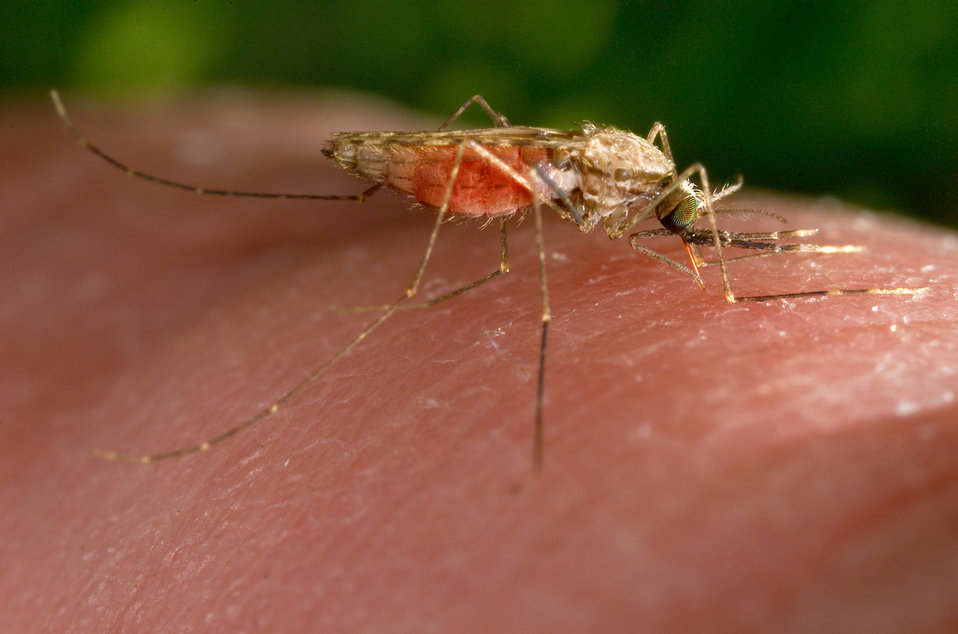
This Anopheles gambiae mosquito is obtaining a blood meal as it feeds on a human host.